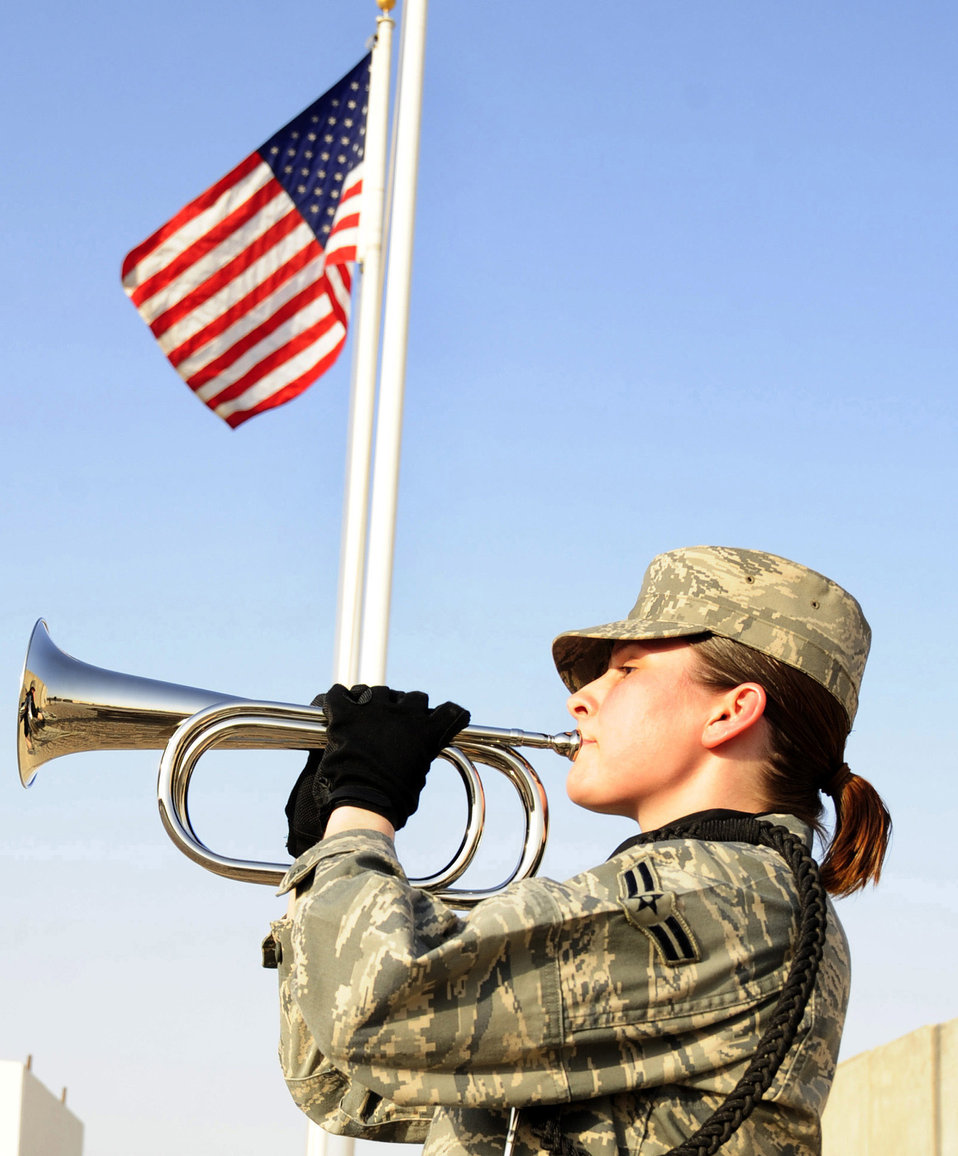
Rise and shine!

Airman 1st Class Caitlin Davies sounds reveille July 24 during a 407th Air Expeditionary Group formation at Ali Base, Iraq. In modern times, reveille sounds in the morning, generally near sunrise, though its exact time varies from base to base.